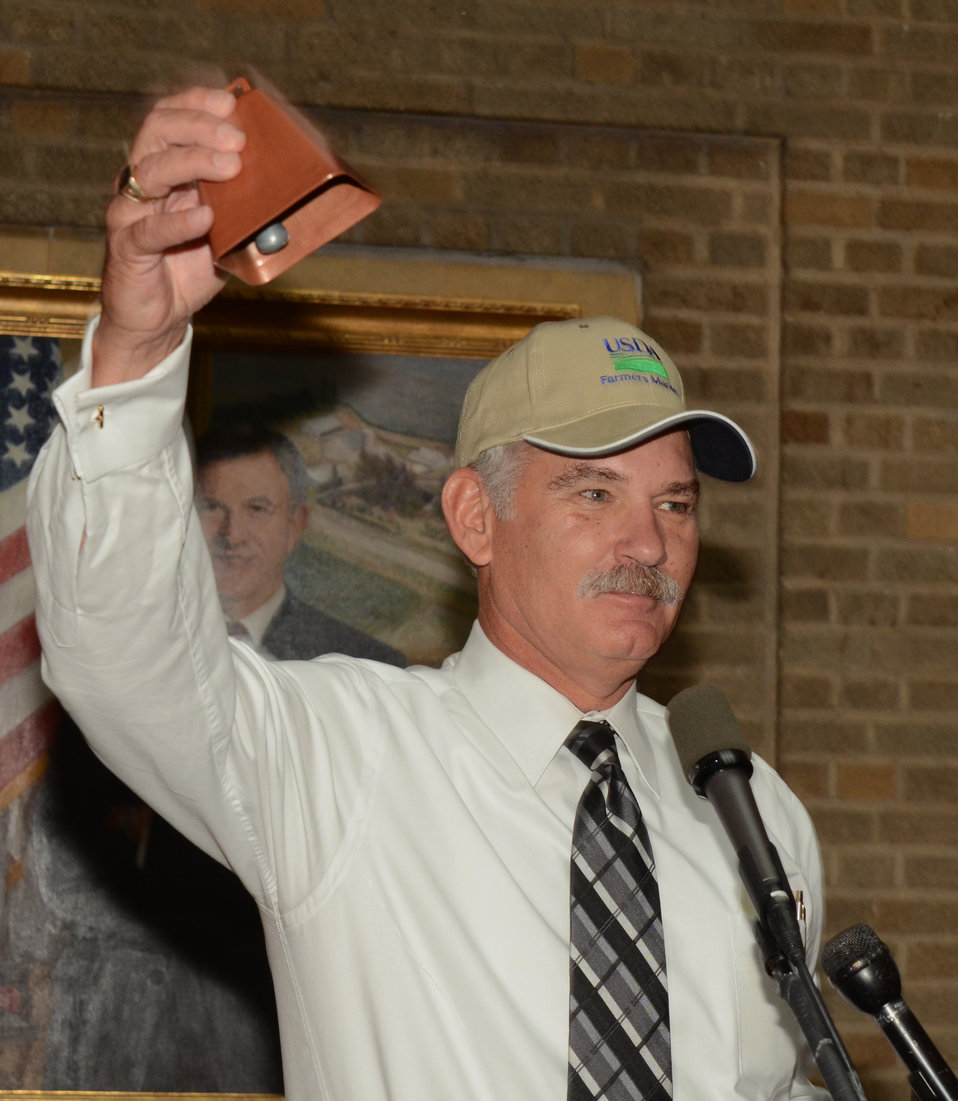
Agriculture Acting Deputy Secretary Michael Scuse rings the bell opening the 2013 Farmers Market on the patio of the U.S. Department of Agriculture (USDA) in Washington, D.C. on Friday, Jun. 7, 2013.